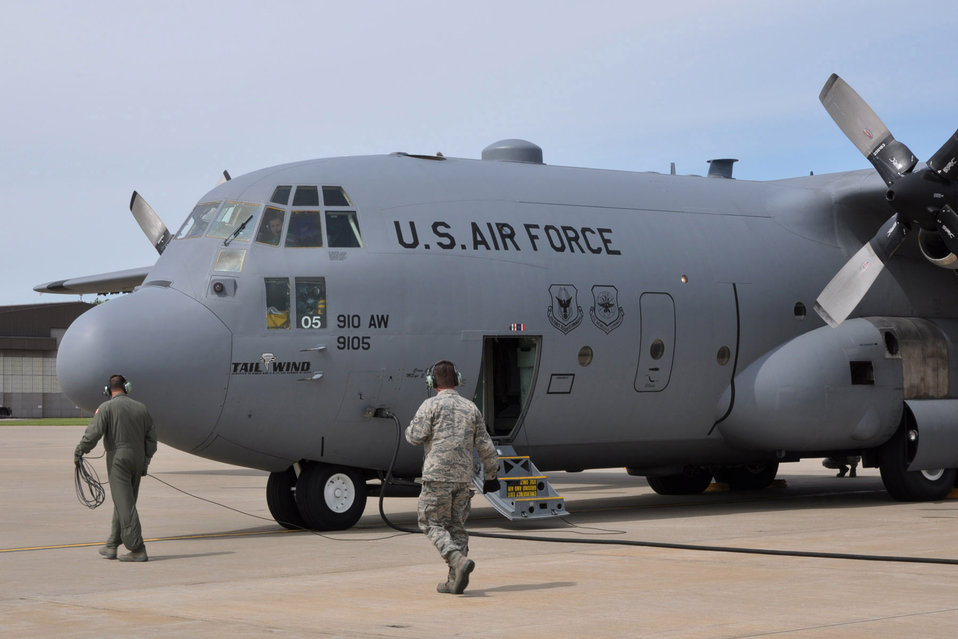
Airmen stage to support oil spill clean up

This C-130 Hercules and crew from the Air Force Reserve Command's 910th Airlift Wing prepares to leave Youngstown Air Reserve Station in Ohio, April 29, 2010, for a staging area in the Gulf Coast region in anticipation of supporting emergency oil spill cleanup efforts.